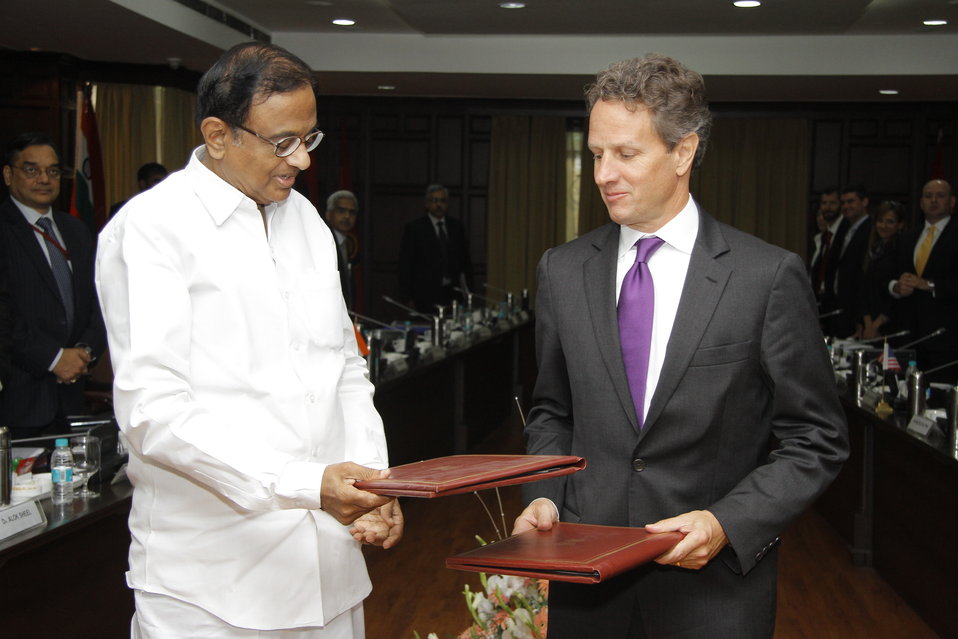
Secretary Geithner with Indian Finance Minister Chidambaram during the 3rd annual meeting of the U.S.-India Economic and Financial Partnership